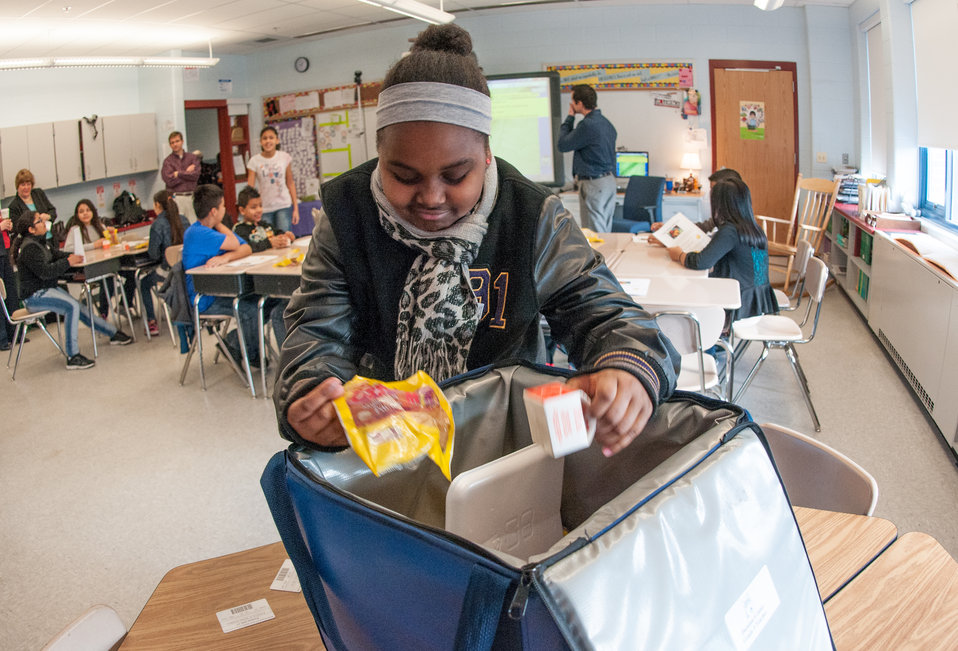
Students make breakfast choices during the inaugural International School Meals Day (ISMD) at Harmony Hills Elementary School in Silver Spring, MD, on Friday, March 8, 2013. at Harmony Hills Elementary School, who participates in the Maryland Meals for Achievement (MMFA), In-Classroom breakfast program, the fresh fruit and vegetable program, and the summer food service program. Department of Agriculture (USDA) Food, Nutrition and Consumer Services participated in (ISMD) Mr. Damien Grasso's 5th grade class was paired with Mrs. Karen McAllister’s class at Dalry Primary School in North Ayrshire, Scotland, United Kingdom. Using a real-time online video website service, the children shared some of the healthy eating and physical activity choices available to them. The Dalry fitness program includes Zumba classes, and Harmony Hills includes a Fitness Club. Both schools have soccer programs. The Harmony Hills 5th grade students shared their thoughts about their healthy menu items, mango, kiwi, and hummus. The Dalry students honored the Maryland students, by having prepared a Southern Maryland dessert, Smith Island cake (made with 7 thin cake layers). Initially, 14 classrooms (grades 3-8) in the U.S. are now connected with 14 classrooms in Scotland. USDA plans to expand the initiative to include partnerships with additional countries in future years. USDA's Food and Nutrition Service oversees the administration of 15 nutrition assistance programs that work in concert to form a national safety net against hunger. Learn more by visiting www.fns.usda.gov and twitter @USDANutrition.